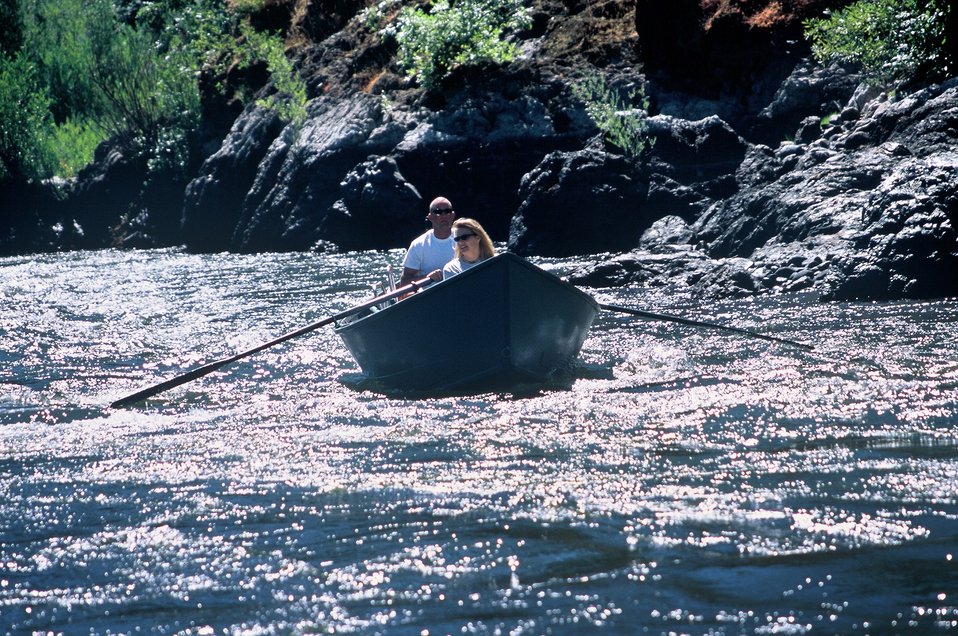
Hog Creek